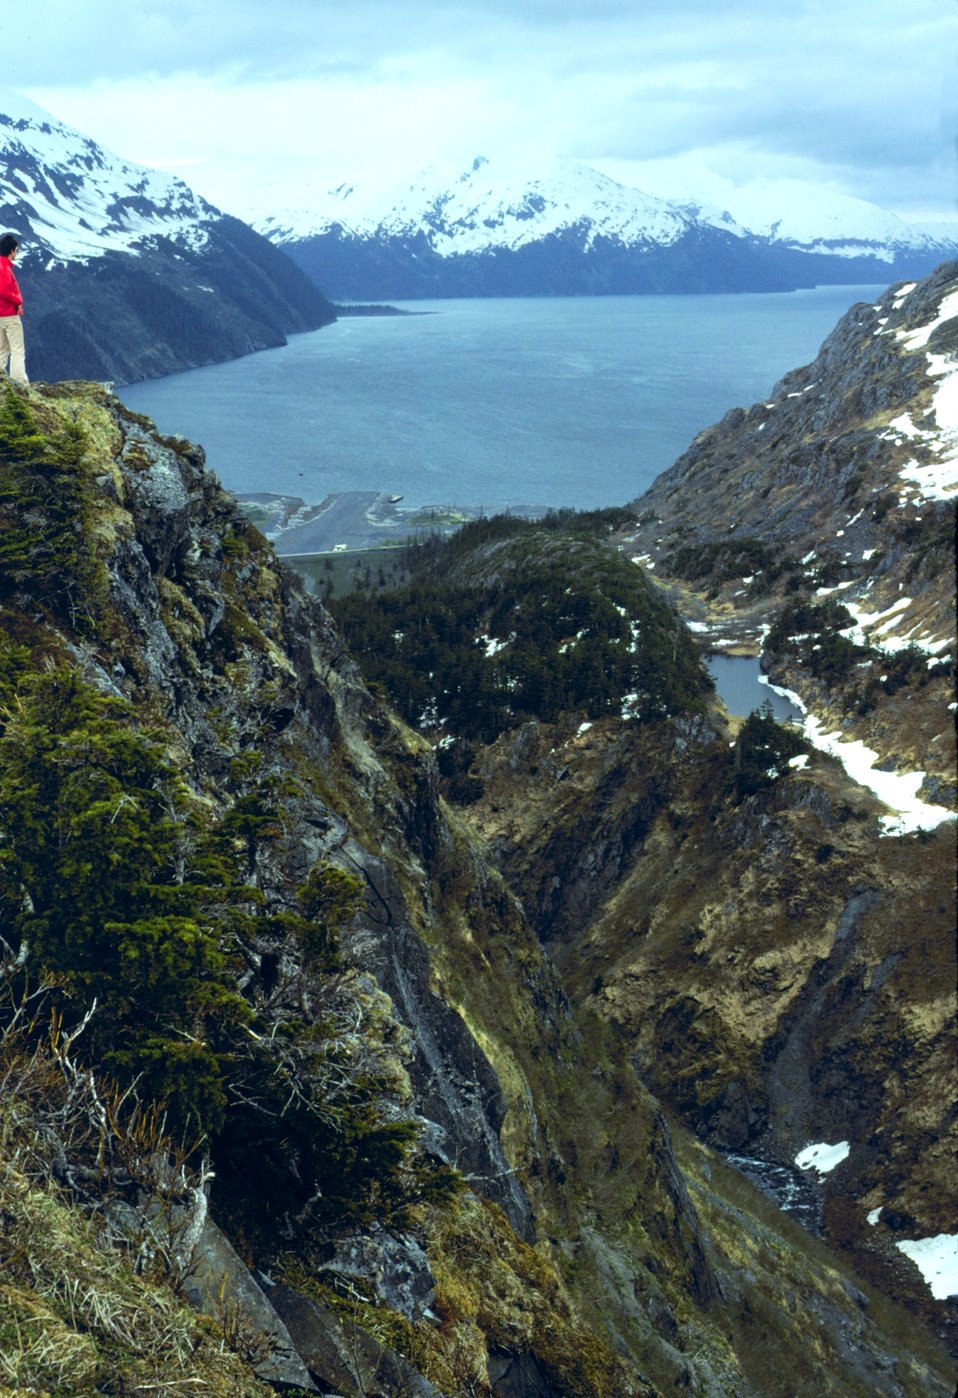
Above Whittier looking down to Prince William Sound. Lieutenant Bob Crowell in left of picture.